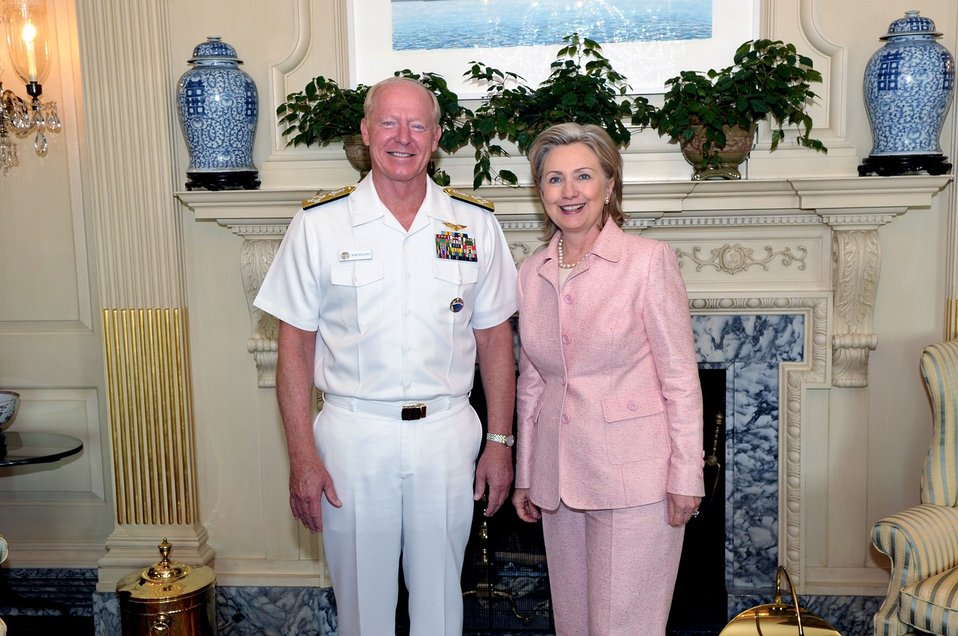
Secretary Clinton Meets With U.S. Admiral Robert F. Willard

U.S. Secretary of State Hillary Rodham Clinton meets With Admiral Robert F. Willard, U.S. Navy, Commander, U.S. Pacific Command (PACOM), at the U.S. Department of State in Washington, D.C., May 14, 2010.